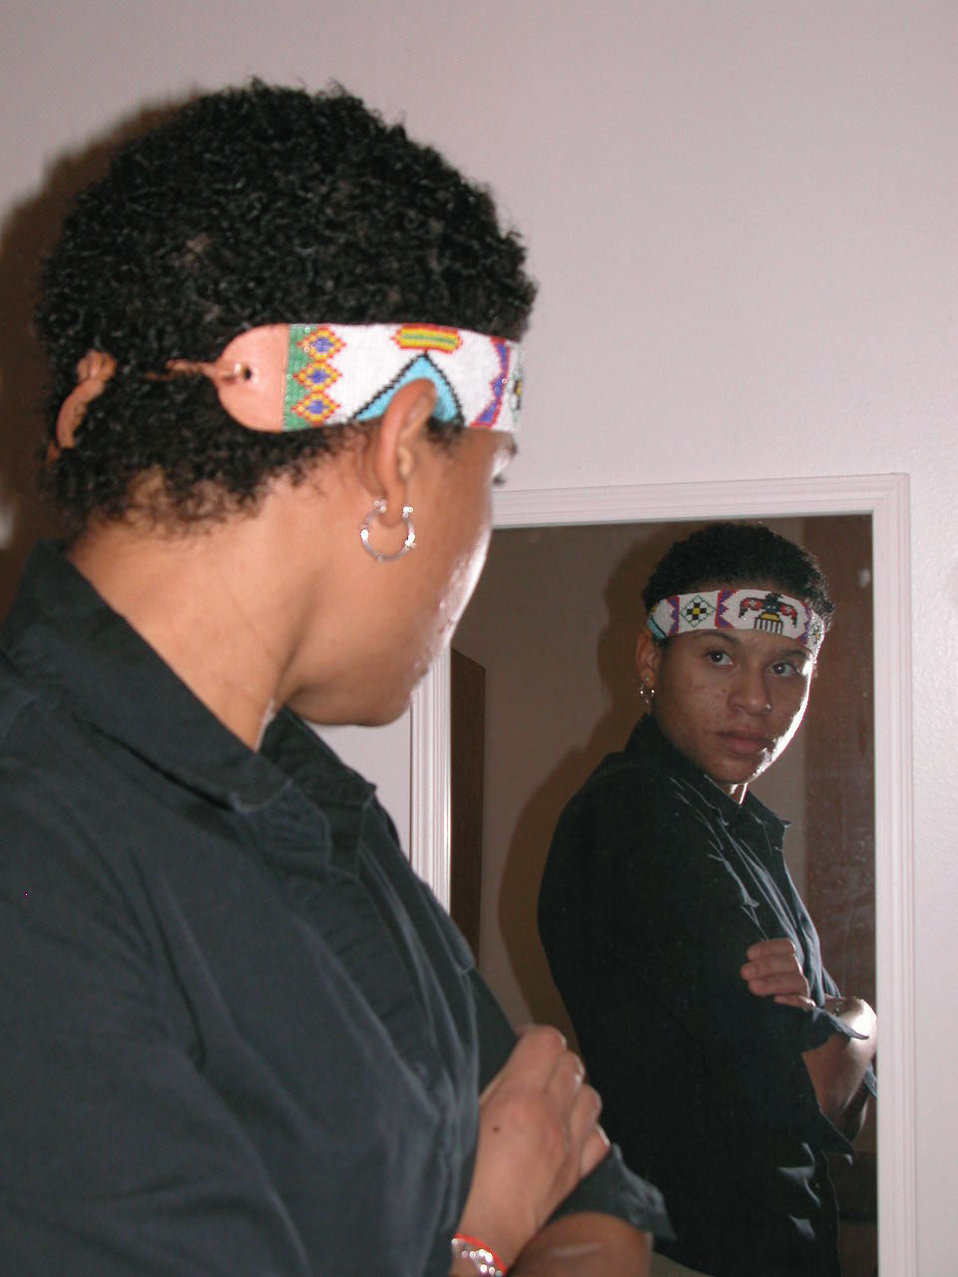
Airman discovers her American Indian heritage

WHITEMAN AIR FORCE BASE, Mo. -- For 18 years, Airman 1st Class Haida Boyd knew little about her background or her culture until a trip to visit her father in New York. She is a descendant of seven eastern American Indian tribes. Airman Boyd is assigned to the 509th Bomb Wing here.